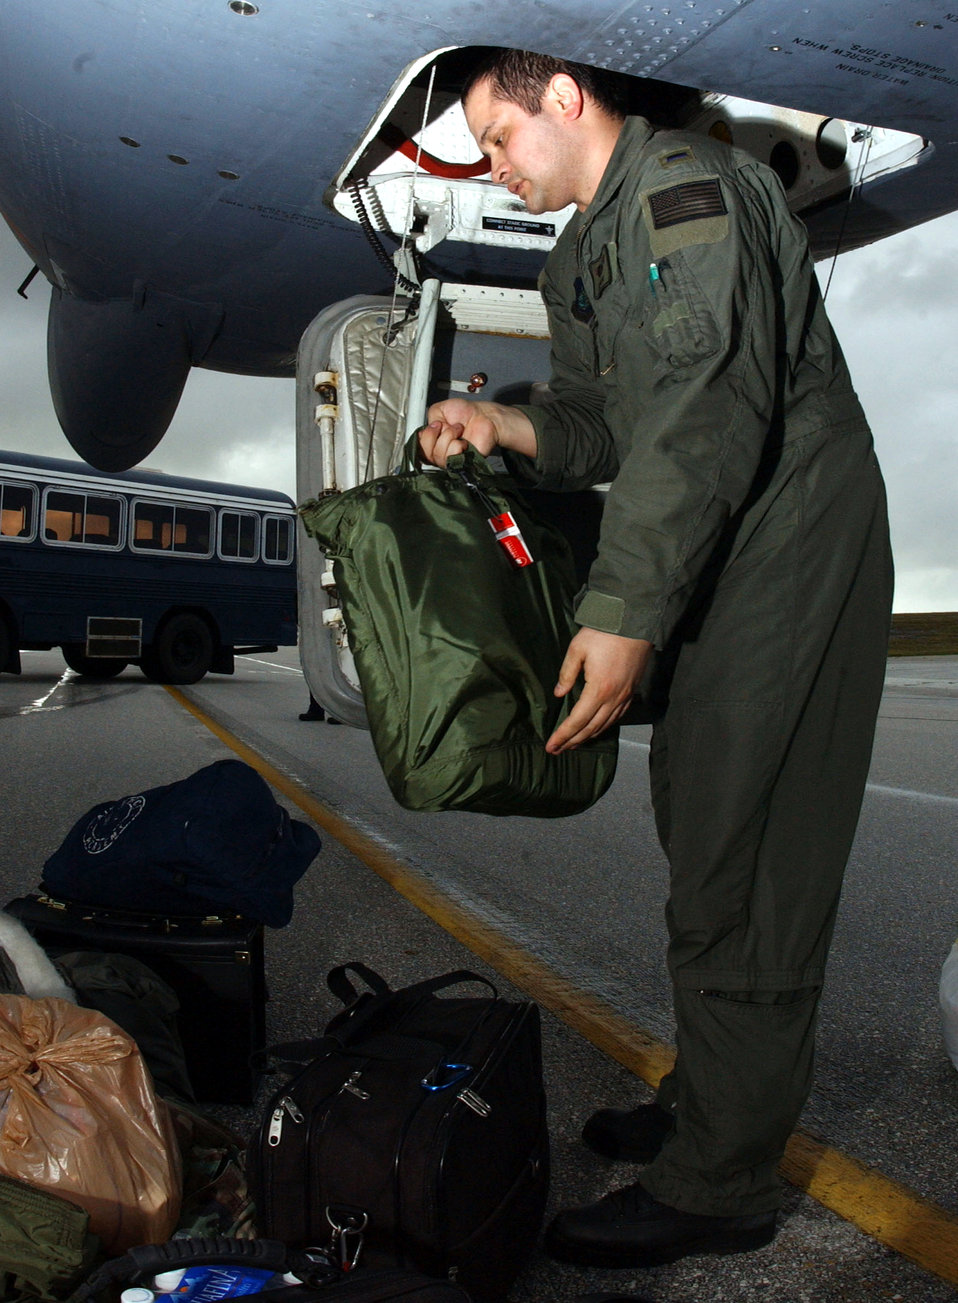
Bombers at Andersen

ANDERSEN AIR FORCE BASE, Guam -- First Lt. Sam Hilyer, a B-52 Stratofortress navigator, unloads crew baggage after his aircraft landed here Feb. 22. Six B-52s and about 300 people from Minot Air Force Base, N.D., are deploying here to support U.S. Pacific Command's request for a rotational bomber force on Guam.